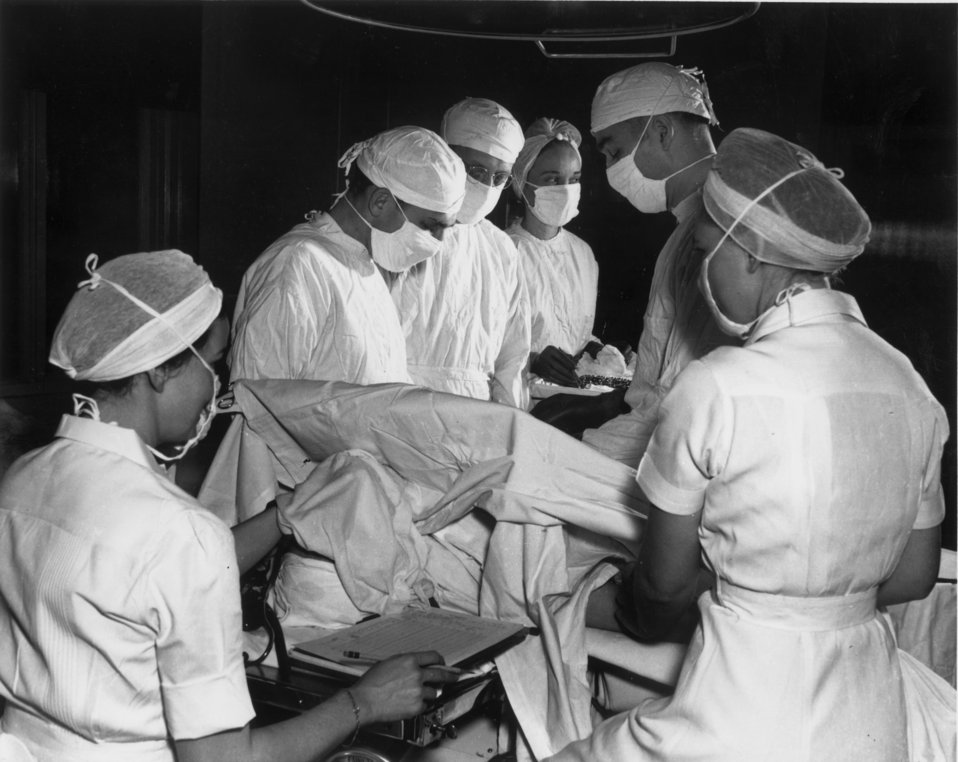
Operation at Oak Ridge Hospital

pro 129 DOE photo by Ed Westcott 11/10/44
Oak Ridge Tennessee